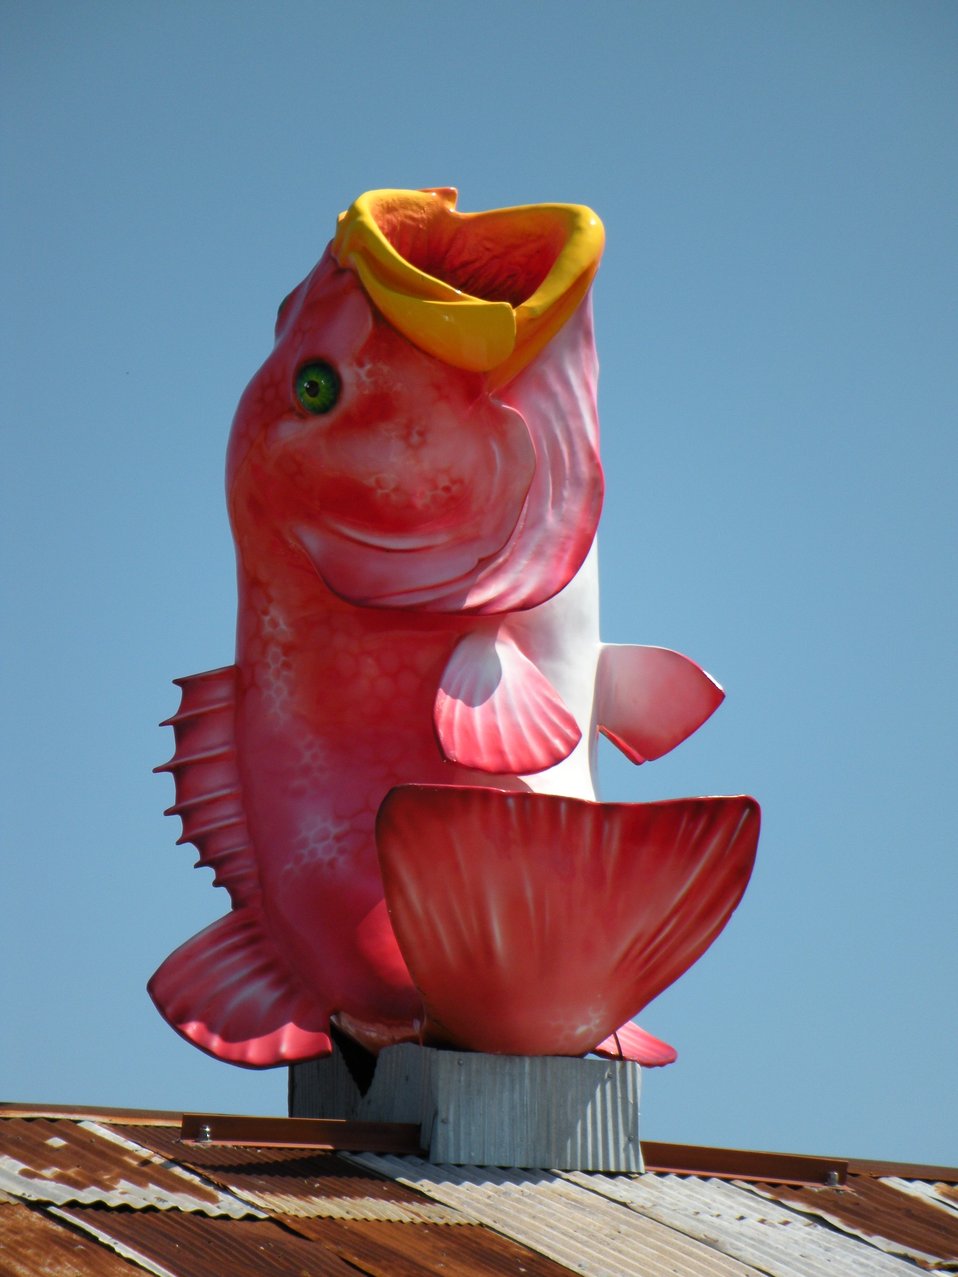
Fish adorning seafood restaurant in Pascagoula area.